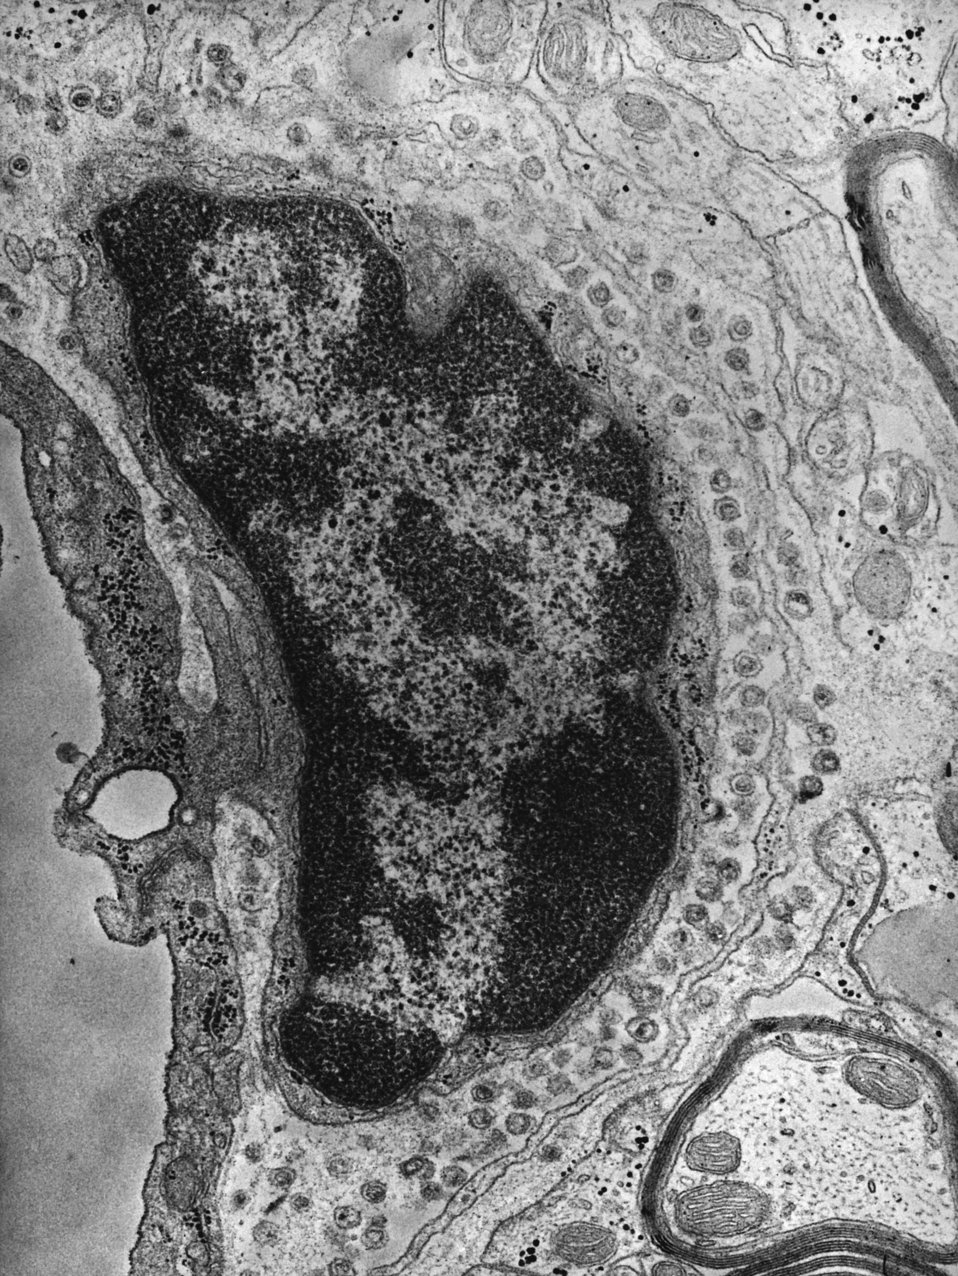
This negatively-stained transmission electron micrograph (TEM) revealed the presence of numerous intracellular Group C RNA tumor virus particles, which were present inside this central nervous system tissue specimen.